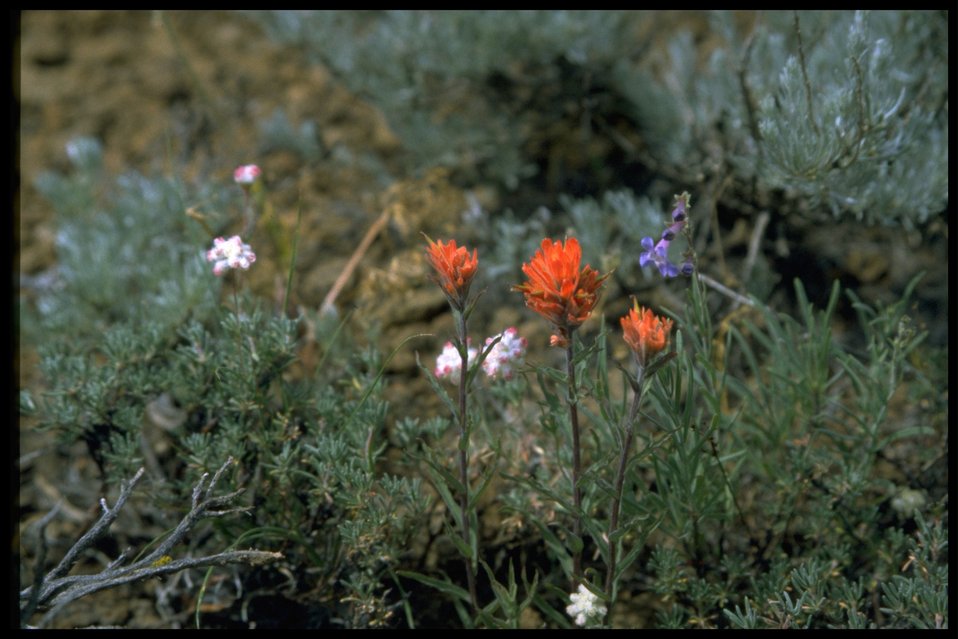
Medium shot of Indian Paintbrush and Fairdner Penstemon wildflowers.